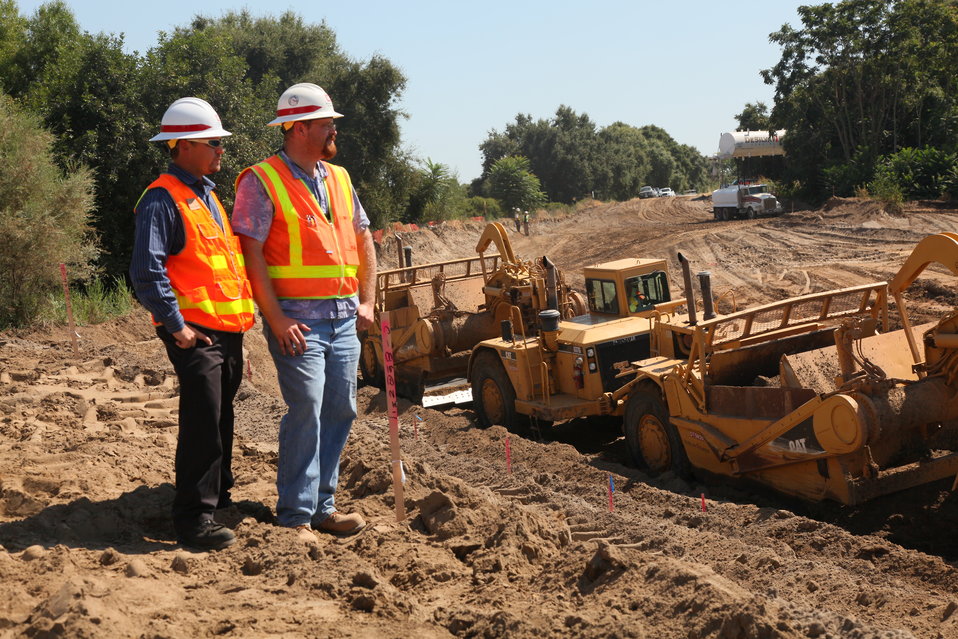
West Sacramento setback levee construction

Project manager Dave Cook (left) and construction representative Edward Stewart discuss the progress of setback levee construction Sept. 7 in West Sacramento as part of a joint effort between the U.S. Army Corps of Engineers and the Central Valley Flood Protection Board to upgrade levees along the Sacramento River and its tributaries.